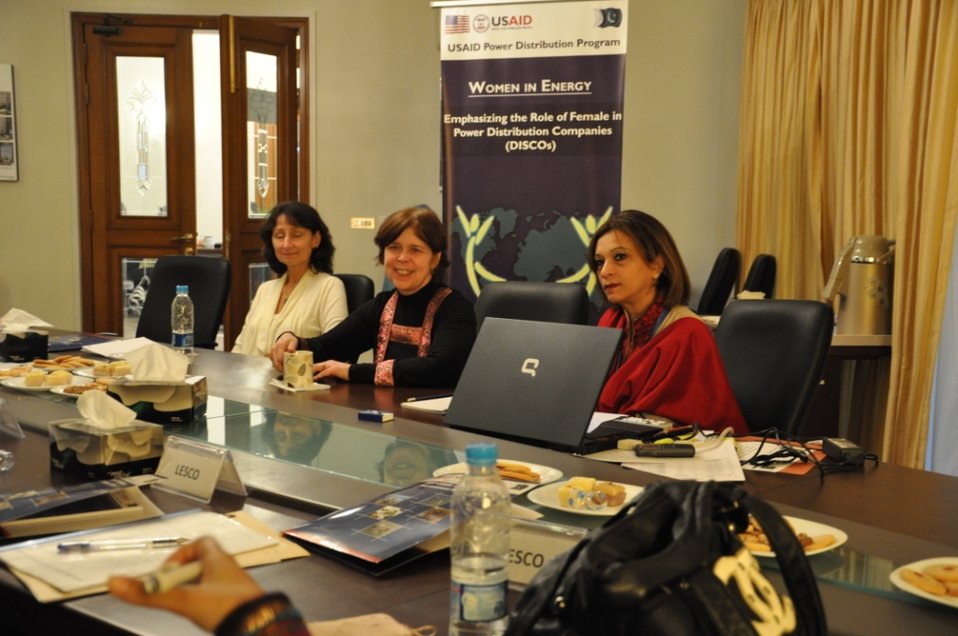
DISCOs Gender Consultation Meeting at USAID Power Distribution Program Office Islamabad

Islamabad, November 30, 2011 - Chief of Party of Afghanistan Clean Energy Program (ACEP) Kabul participated as a guest in the closing session of the Consultation Meeting for the enhancement of Gender Strategy at USAID Power Distribution Program. The life of working women in the war hit atmosphere of Kabul was discussed.